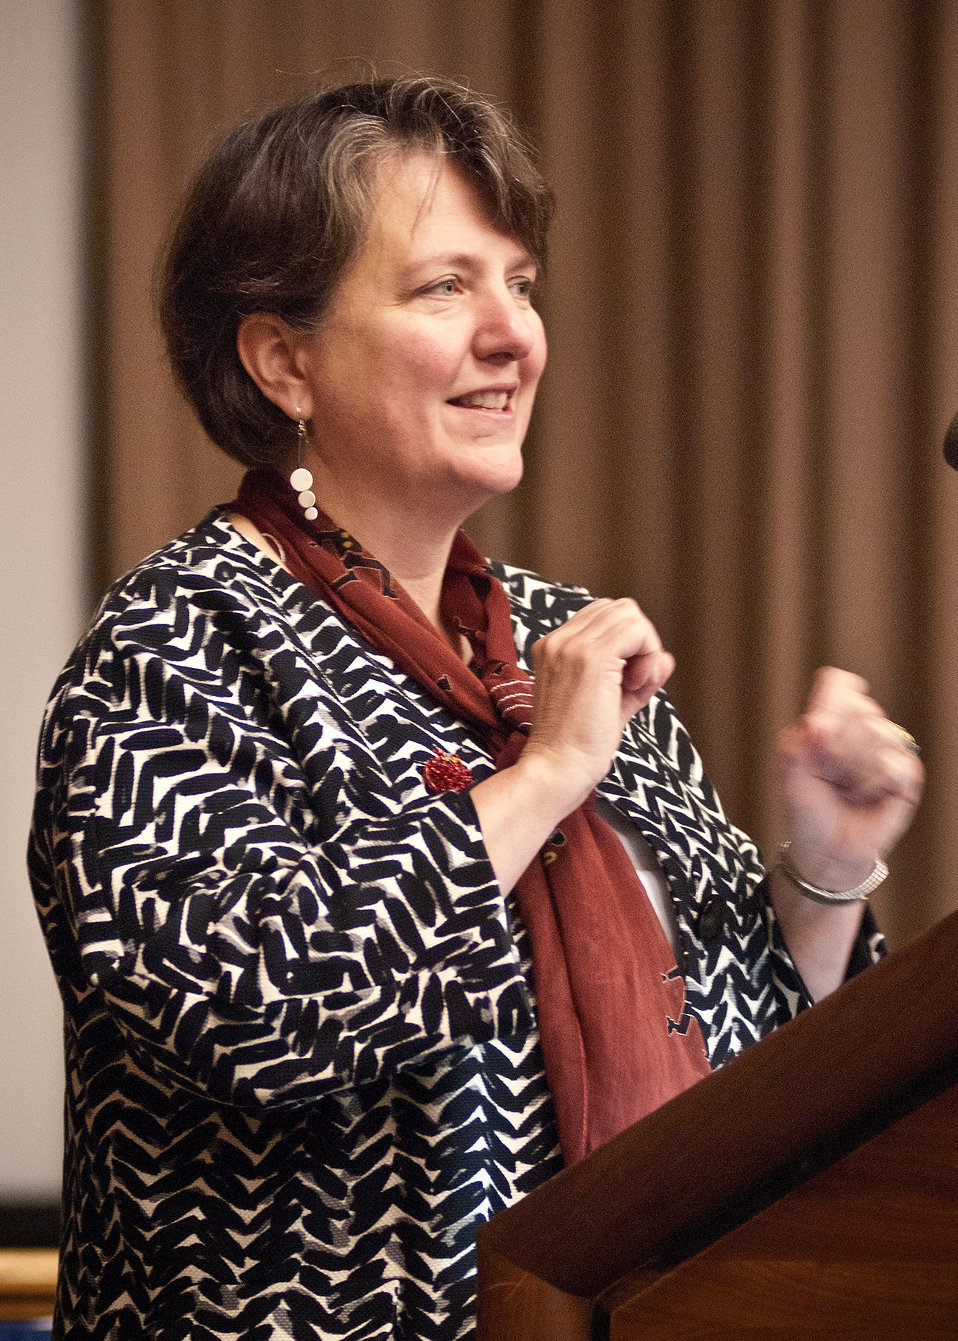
Deputy Secretary of Agriculture Kathleen Merrigan, spoke to U.S. Department of Agriculture employees during National Disability Employment Awareness Month event in Washington, DC, Wednesday, October 5, 2011. Deputy Secretary Kathleen Merrigan and Agriculture Secretary Tom Vilsack are dedicated to establishing the USDA as the lead Federal agency in employing individuals with disabilities. The theme for the event is “Profit by Investing in Workers with Disabilities.” USDA is committed to ensuring that all our programs are accessible and inclusive of individuals with disabilities.